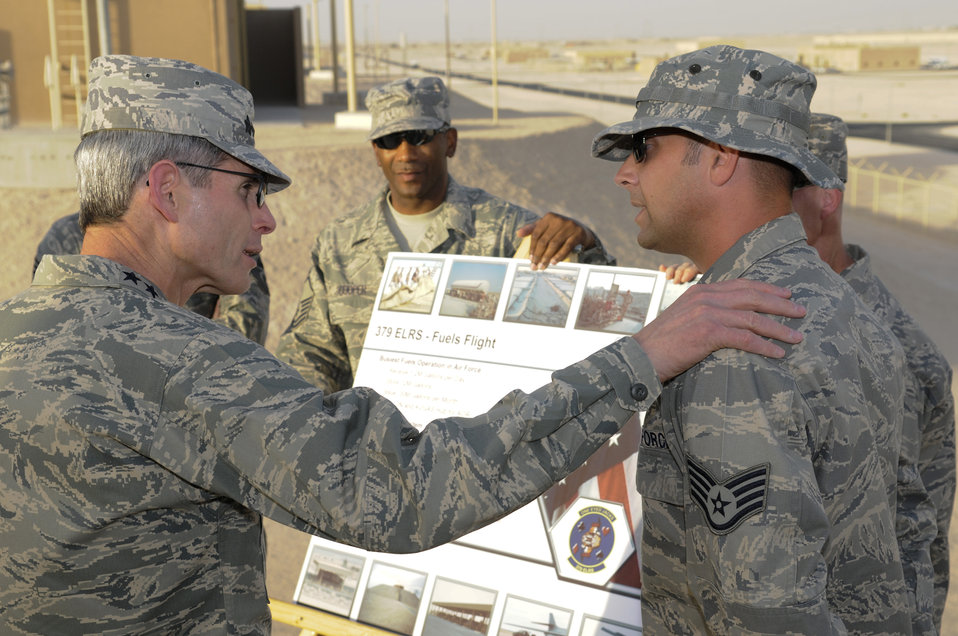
CSAF visits Southwest Asia

Air Force Chief of Staff Gen. Norton Schwartz asks questions of Staff Sgt. Matthew Cramer about fuels procedures at the 379th Air Expeditionary Wing Oct. 20. The visit marked the CSAF's first trip to the U.S. Air Forces Central area of responsibility since his appointment as the Air Force chief of staff. Sergeant Cramer is assigned to the 379th Expeditionary Logistics Readiness Squadron.